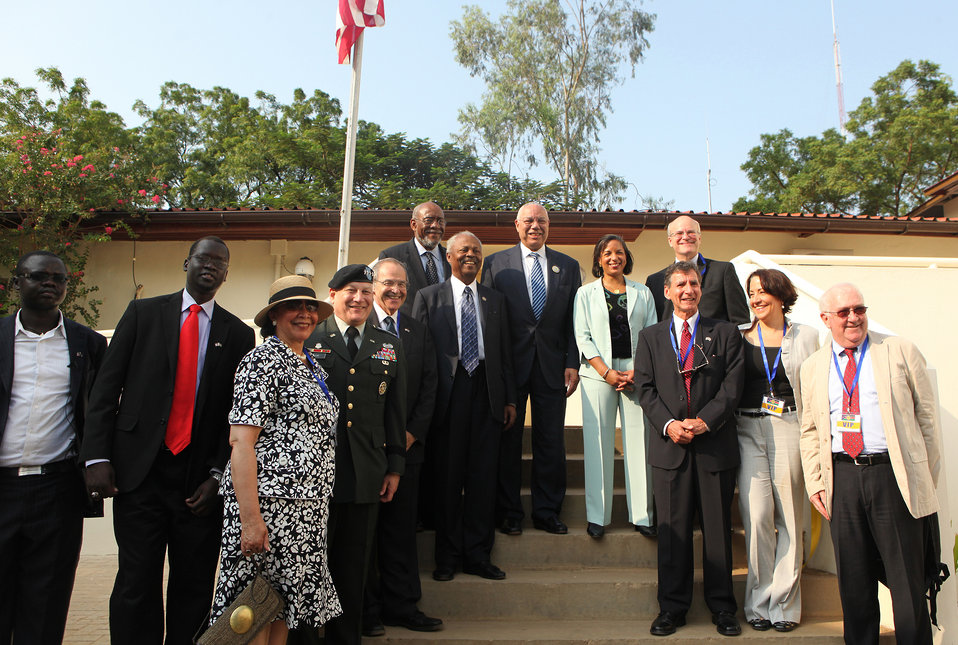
South Sudan Independence Day

South Sudanese-American 'Lost Boys'; Mrs. Alma Powell; General Carter F. Ham, Commander for the U.S. Africa Command; Ambassador Princeton Lyman, U.S. Special Envoy for Sudan; Honorable Johnnie Carson, Assistant Secretary of State for African Affairs, Department of State; Honorable Donald M. Payne, U.S. Representative from New Jersey and Ranking Member of House Foreign Affairs Subcommittee on Africa and Global Health; Ret. General Colin Powell, former Secretary of State for the United States; Ambassador Susan E. Rice, U.S. Permanent Representative to the United Nations; Ambassador Donald K. Steinberg, Deputy Administrator for USAID; Ambassador R. Barrie Walkley; Brooke Anderson, Deputy National Security Advisor, Chief of Staff and Counselor for the National Security Staff; and Mr. Ken Hackett, President of Catholic Relief Services inaugurate the new U.S. Embassy in Juba, South Sudan on July 9, 2011.